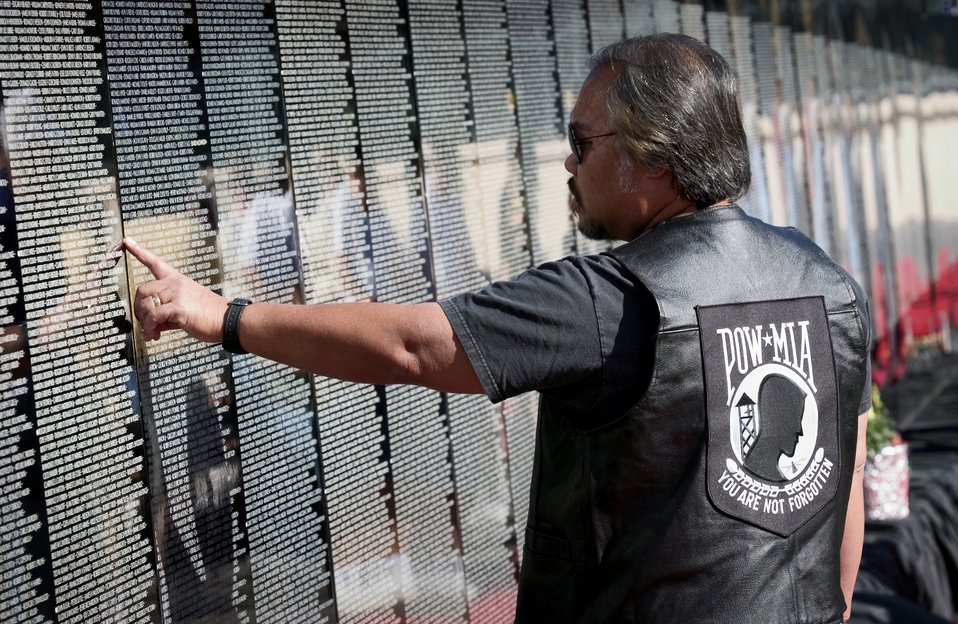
Remember

LAS VEGAS -- Retired Chief Master Sgt. Steve Avilla touches the name of a lost friend at The Moving Wall during a Nevada Veterans Day Celebration. The memorial is a half-size replica of the Vietnam Veterans National Memorial,